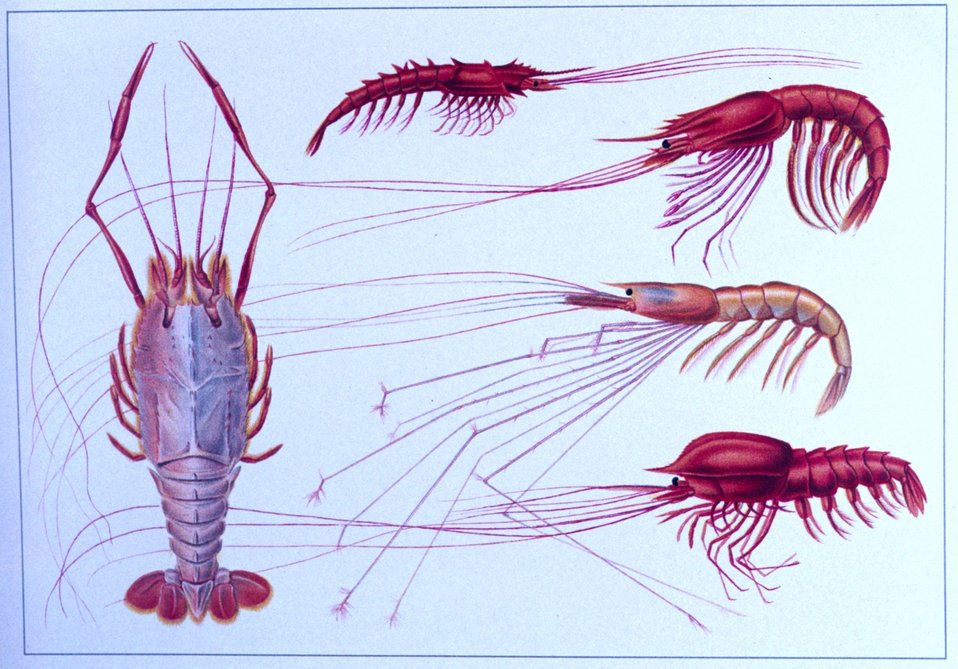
Pelagic and deep sea bottom crustaceans. Top: Gnathophausia sp. from Gulf of Gu inea, 4000 meters. Left: Pentacheles sp., from the Somali coast at 1289 meters. Top right: Aristaeopsis sp. Maldive Islands at 2253 meters. Middle right: Nematocarcinus sp., from 863 meters on the East African coast. Bottom right: Notostomus sp., Gulf of Guinea at 4000 meters. P. 536.